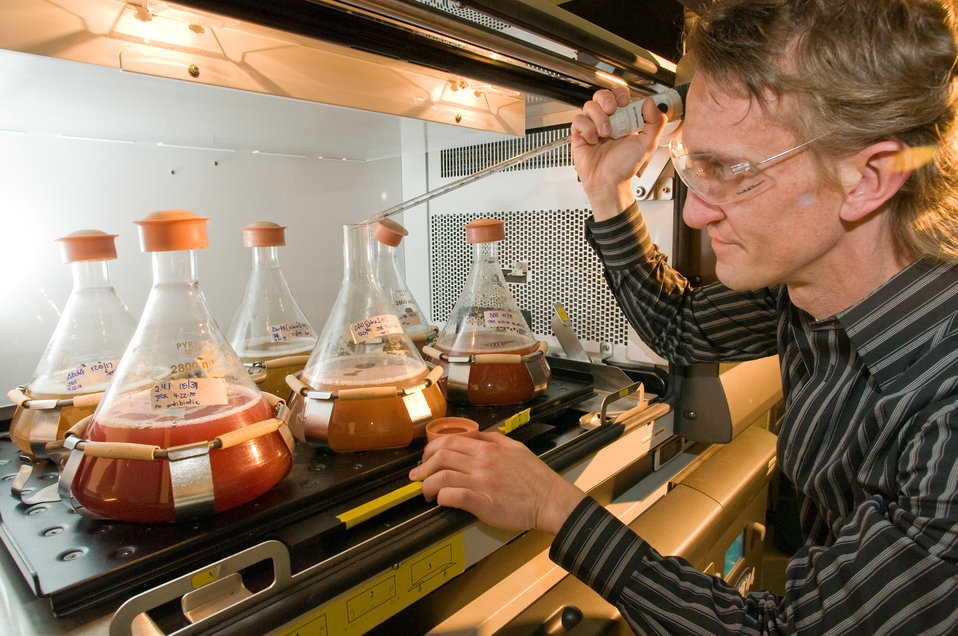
ARGONNE BIOPHYSICIST OVERSEAS THE GROWTH OF NEW VARIANTS OF PHOTOSYNTHETIC BACTERIA DESIGNED TO PRODUCE TARGET BIOFUEL MOLECULES.

In the culture mode, it is easy to extract cells during all phases of growth for analysis, and add chemicals to speed growth or induce the production of target fuels.